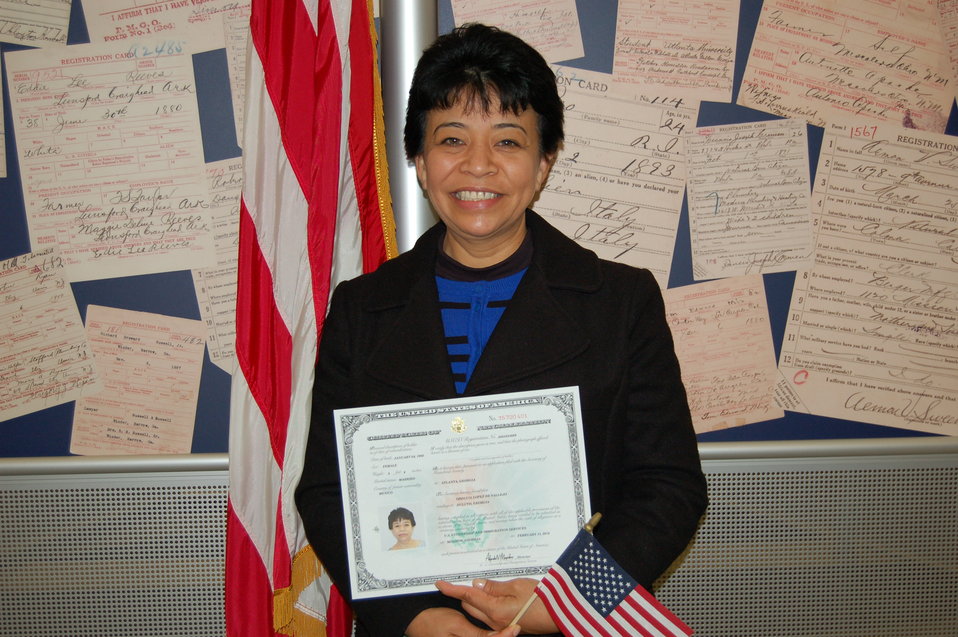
New Citizens